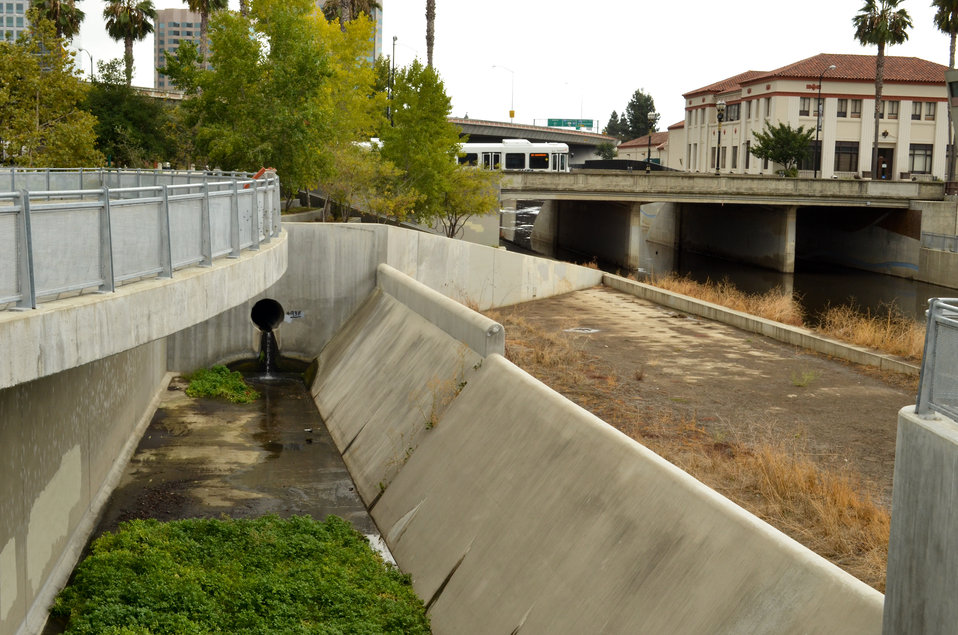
Guadalupe River Project bypass culvert and retaining walls

A bypass culvert and retaining walls, shown Oct. 5, 2011, were constructed in late 2004 as part of the U.S. Army Corps of Engineers Sacramento District ’s decades-long Guadalupe River Project to reduce flood risk for downtown San Jose, Calif. The project is scheduled for completion next year.